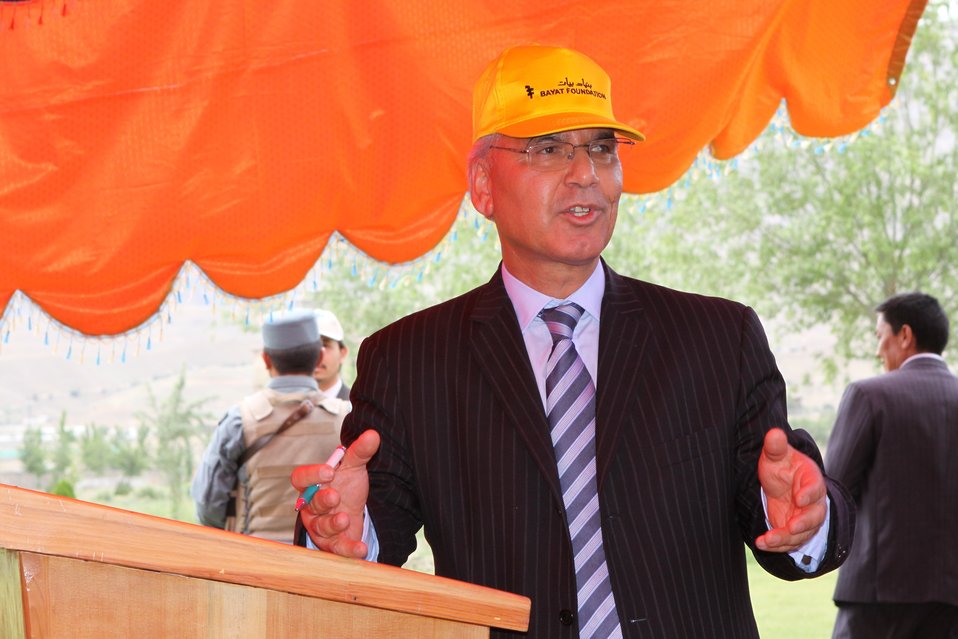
100526 AUAF Graduation 382